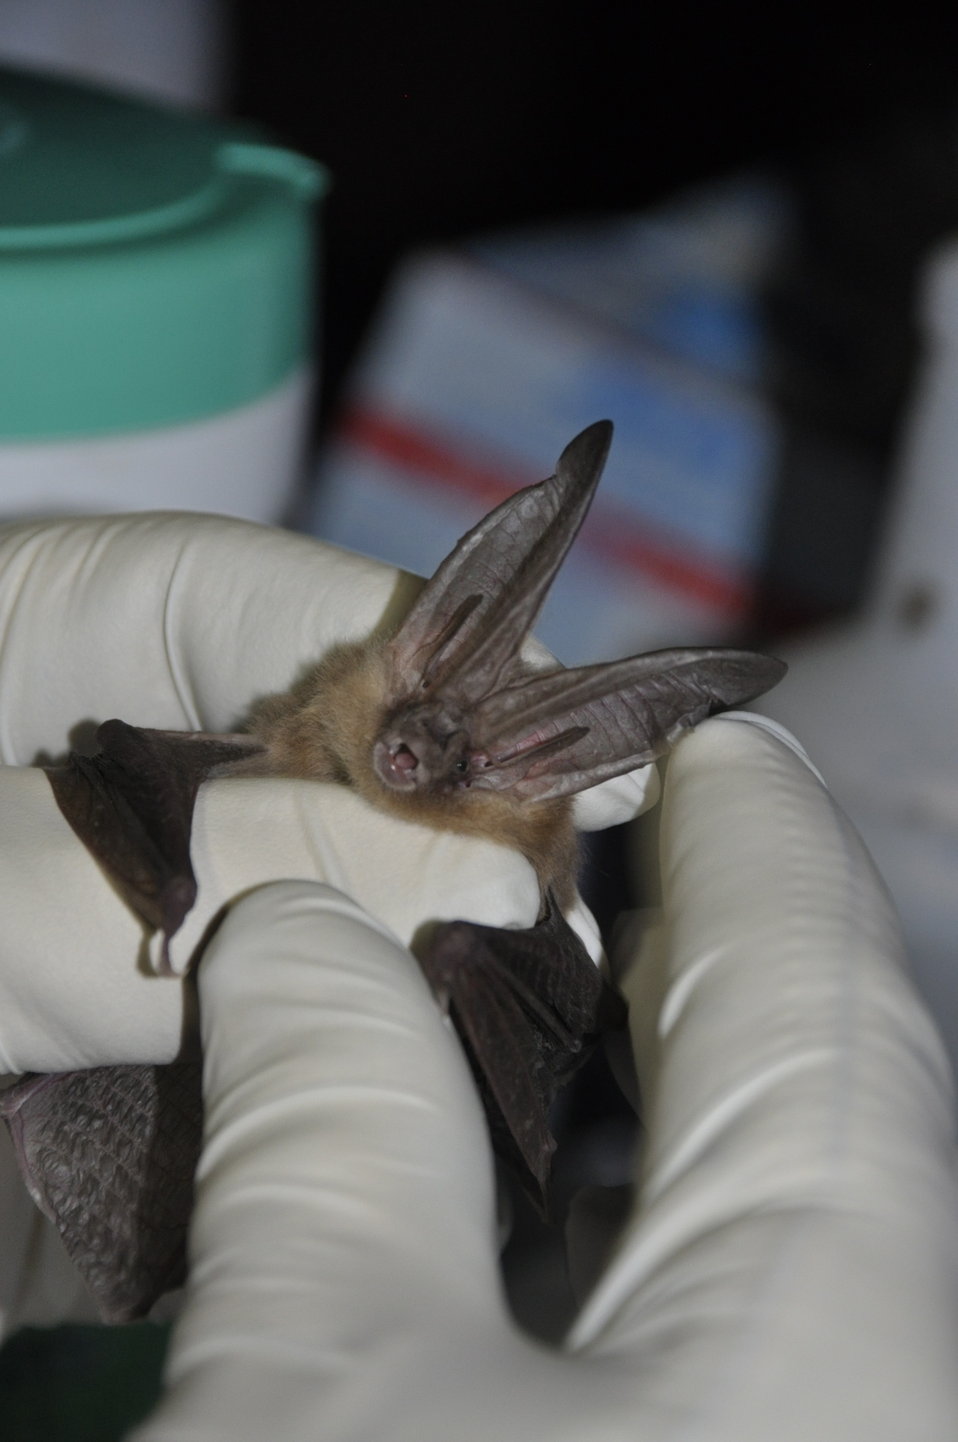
Townsend's big-eared bat

Researcher inspects Townsend's big-eared bat (Corynorhinus townsendii)